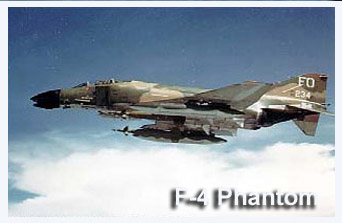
F-4D Phantom

An F-4D of the 435th Tactical Fighter Squadron of the 8th Tactical Fighter Wing, flies over North Vietnam in September 1972.